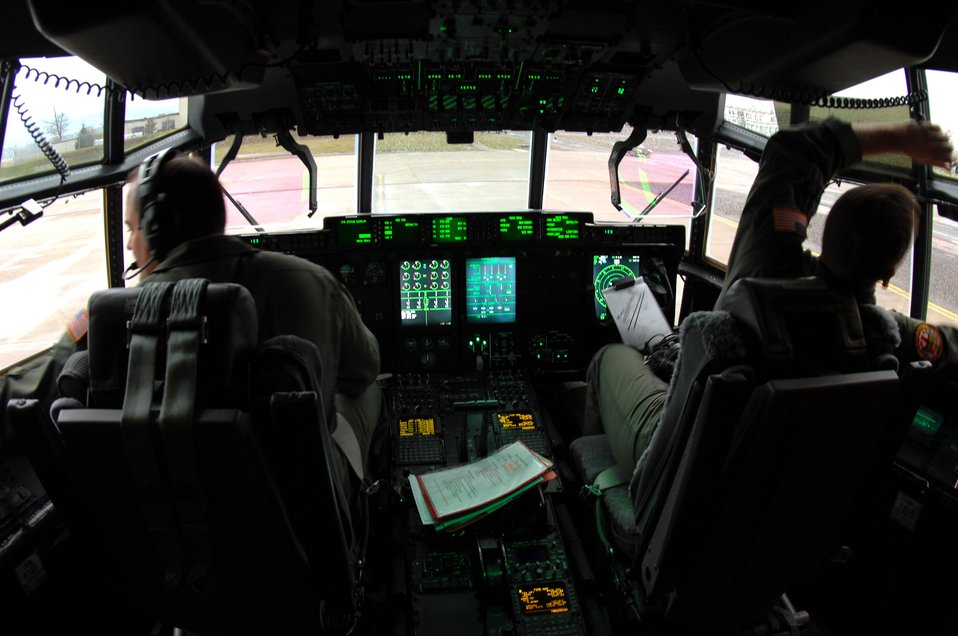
Ramstein receives first upgraded C-130

Lt. Col. Todd Oliver (left) and his wingman prepare for take off in the new C-130J Hercules aircraft Nov. 8 at Ramstein Air Base, Germany. Starting 2009-2011 the C-130J will began to replace the aging C-130Es at Ramstein aB.